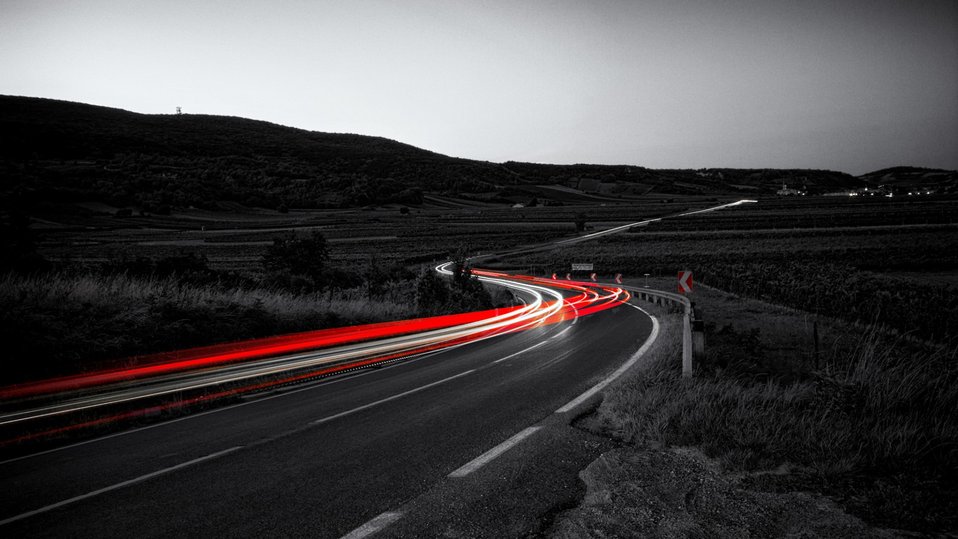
Energy

Light trail in evening landscape.